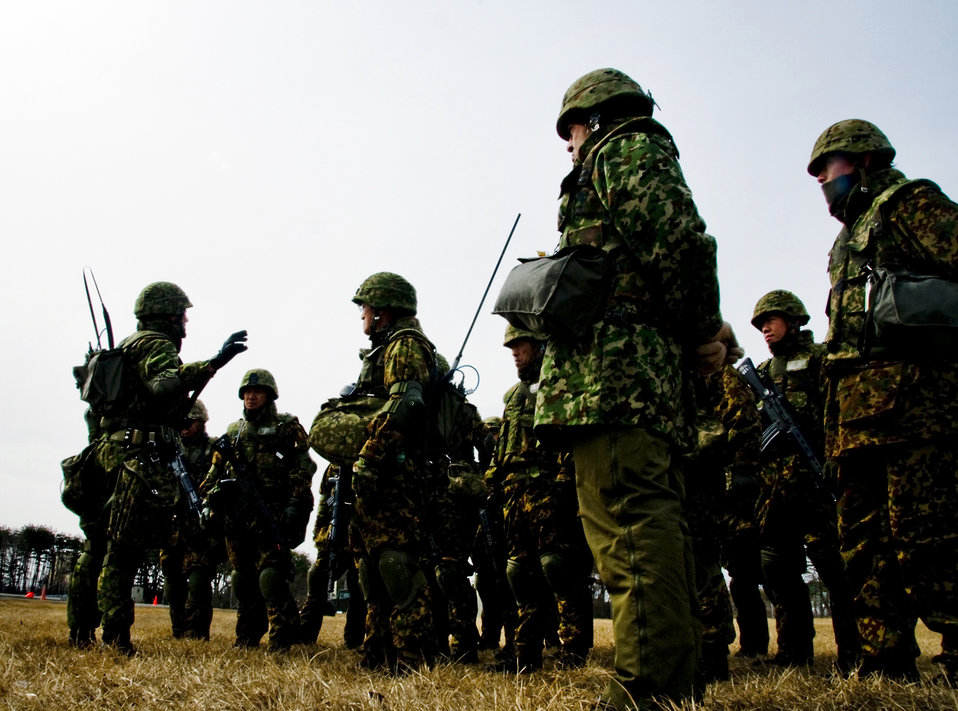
Japan, U.S. forces come together to Guard, Protect

Members of the Japan Ground Self-Defense Force 9th Division, 5th Infantry Regiment, are debriefed after a successful Exercise Guard and Protect scenario March 13 at Misawa Air Base, Japan. The JGSDF troops were part of a 24-hour exercise that partnered them with the Japan Air Self-Defense Force 3rd Air Wing and the U.S. Air Force 35th Security Forces Squadron.